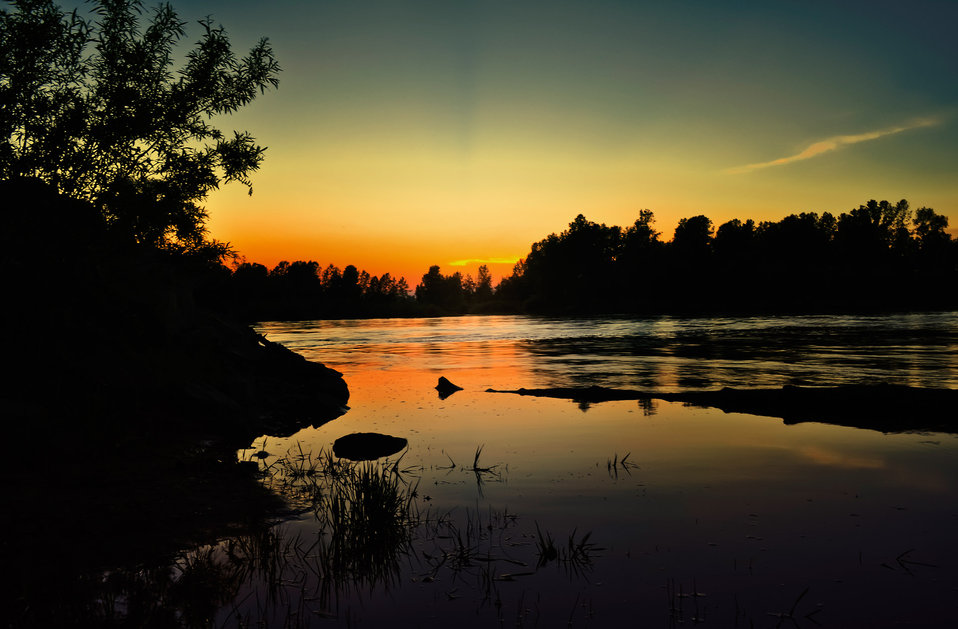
Evening dawn

The orange sun sets over the river.